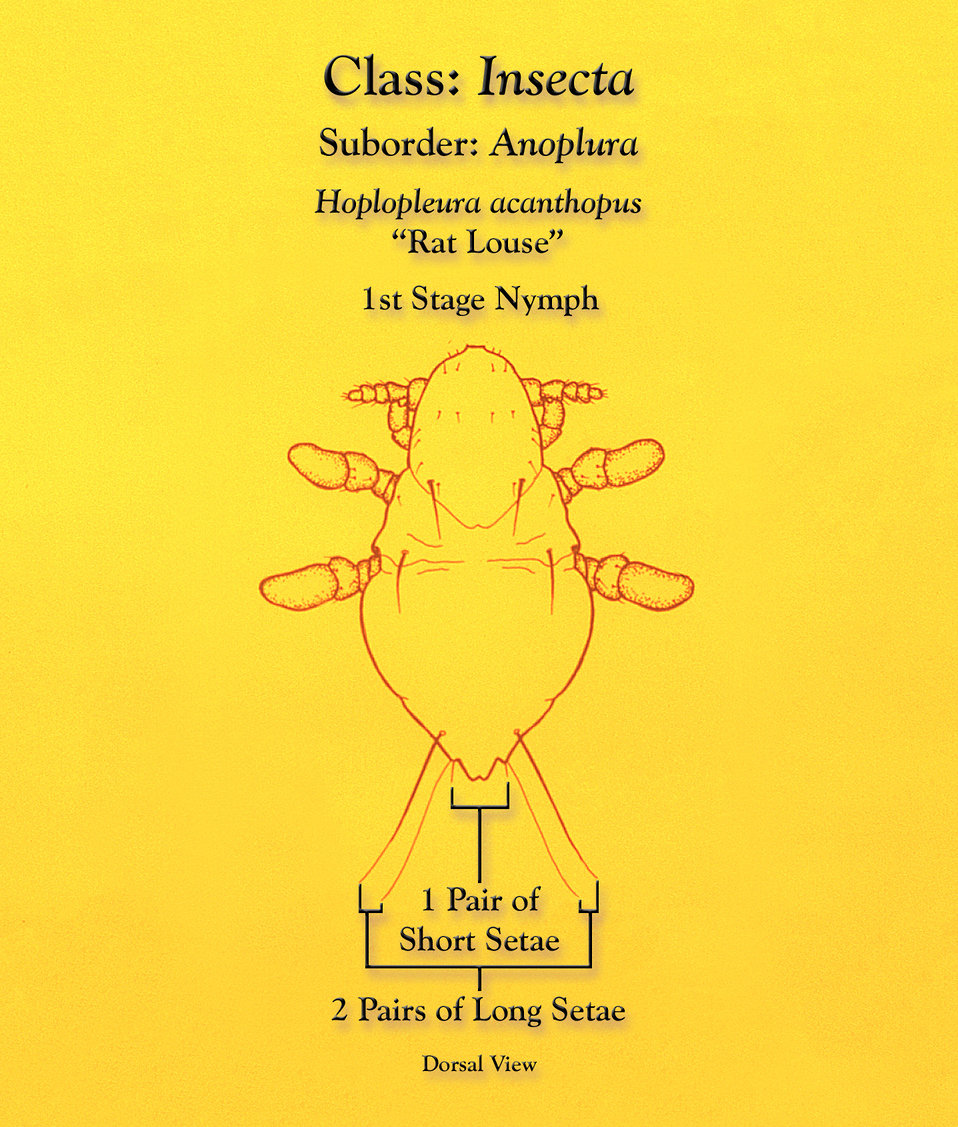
This illustration depicts the morphologic characteristics found to be displayed by the Anopleural sucking 'rat louse', Hoplopleura acanthopus during its first nymphal stage of development.